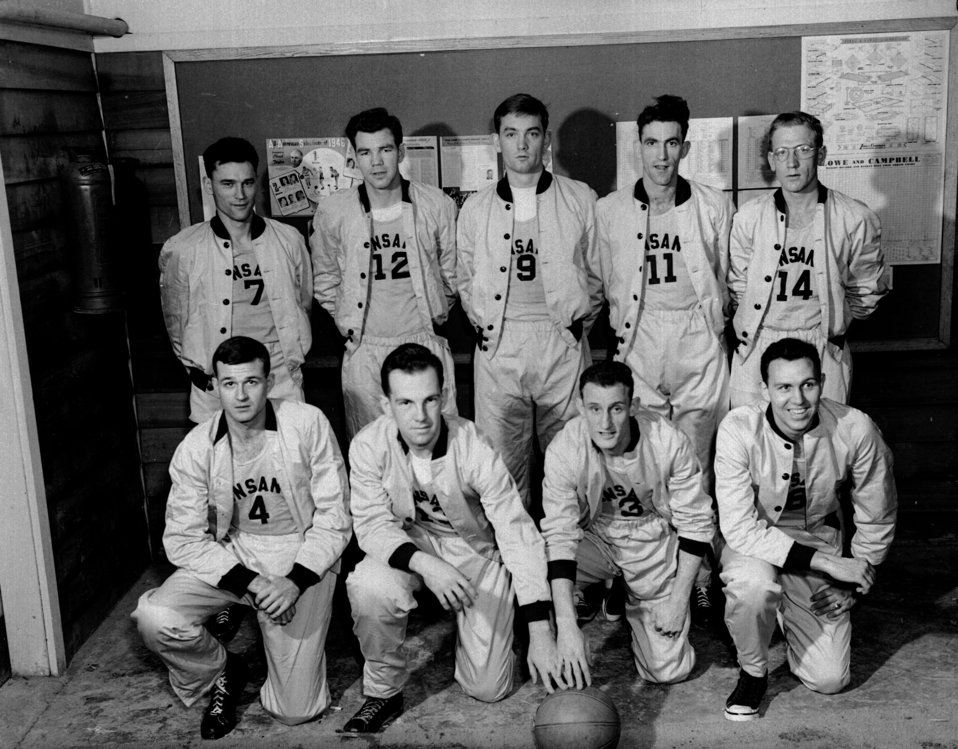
Basketball Team Monsanto Oak Ridge

DOE Photo by Ed Westcott Oak Ridge Tennessee 1-6-1947